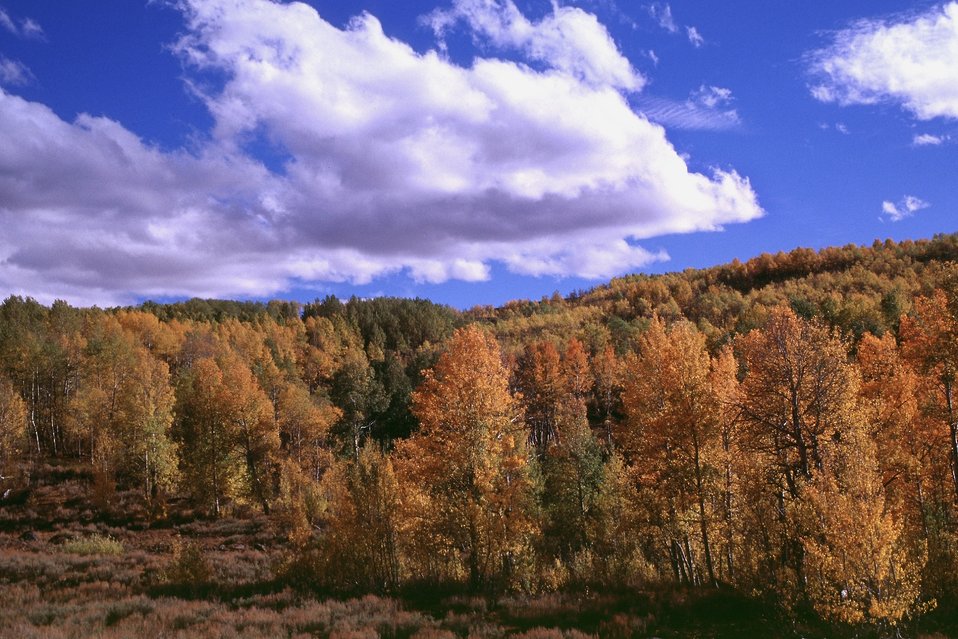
Aspens at Fish Creek, Steen's Mountain.